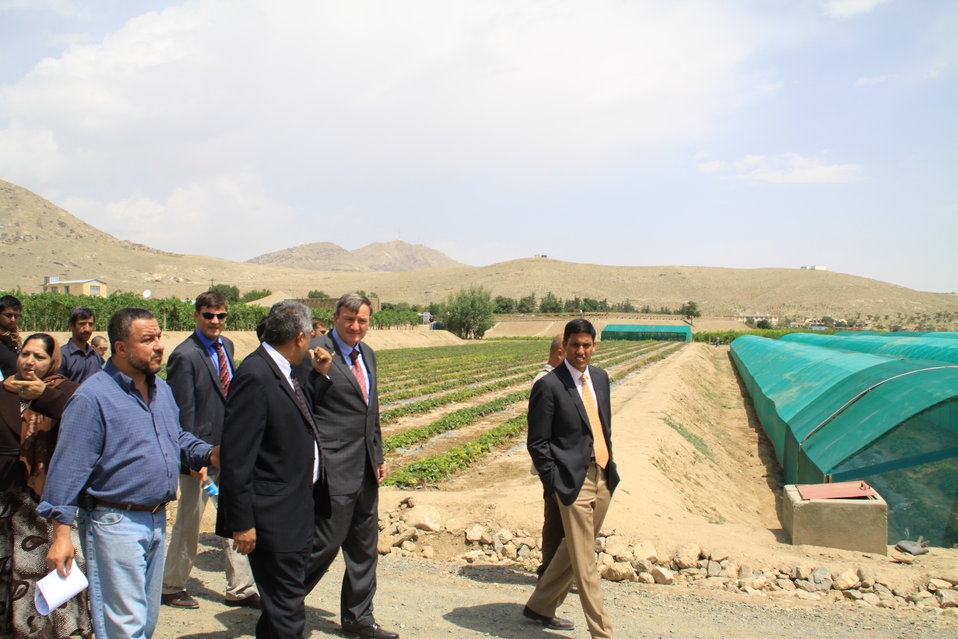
Badam Bagh Farm